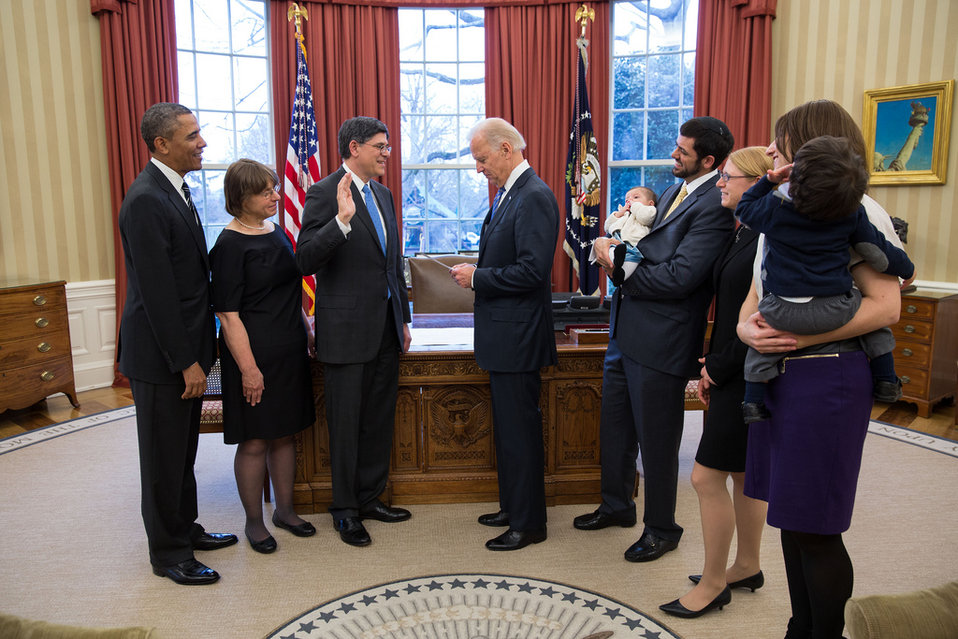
Treasury Secretary Jack Lew officially sworn in to office

President Barack Obama watches as Vice President Joe Biden swears in Treasury Secretary Jack Lew during a ceremony in the Oval Office, Feb. 28, 2013. Lew's family, pictured from left, are: wife Ruth Schwartz; granddaughter Eliora Lew; son Danny Lew; daughter Shoshana Lew; daughter-in-law Zahava Lew; and grandson Moshe Lew.